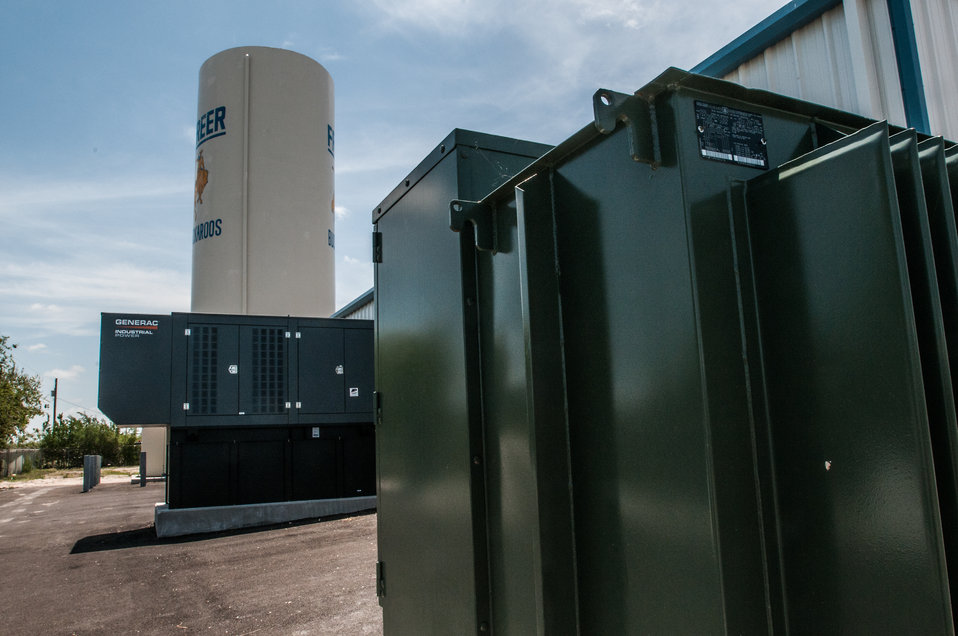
Water holding tank (left-right), generator, and transformer, at the Freer Water Control and Improvement District (FWCID) Arsenic Removal System Site, on Tuesday, June 18, 2013, in Freer, Texas.
FWCID benefits from the financial assistance of the U.S. Department of Agriculture (USDA) Rural Development (RD) to complete a two-phase approach to meeting the city’s water supply and safety needs, on Tuesday, June 18, 2013. Although, the naturally occurring arsenic levels have remained constant for more than a century, the Environmental Protection Agency (EPA) safe level standards have established lower levels of arsenic to be safe for human consumption. To meet those levels FWCID approached USDA and was awarded a $986,000 loan for Phase I, to install two new water wells, each rated at 167 gallons per minute (creating a total of eight wells); 13,600 feet of well collection lines; and 15,000 linear feet of well control line to remotely control the well pumps and the 1,000,000 gallon holding tank at the well facility, which supplies water to the new Arsenic Removal System (Phase II). Previously, water was manually controlled by personnel who knew when and how long to manually opened and closed water valves or started well pumps to ensure holding tank levels were within operating levels during peek and slack times of the day. Phase II was a combination of a $1,832,000 loan and a $1,258,750 grant, which provided for the customized arsenic removal system, seen in these photos. The system includes a new 3,530 sp. ft. facility, on a .76-acre site, and houses the operations room, computer and power system, laboratory room, and pump systems. The entire operation can be monitored through a desktop computer interface system. The computer-controlled system ensures raw water is fed to the arsenic removal pump system, which works in sequence to maintain a constant pressure, when needed, to pump water through (blue) arsenic removal absorber vessels, and into ground storage tanks that feeds the residential and commercial needs of the city. Samples of water are periodically tested; and so far the arsenic levels have been below 1 part per billion (PPB), well under the 10 PPB limit.